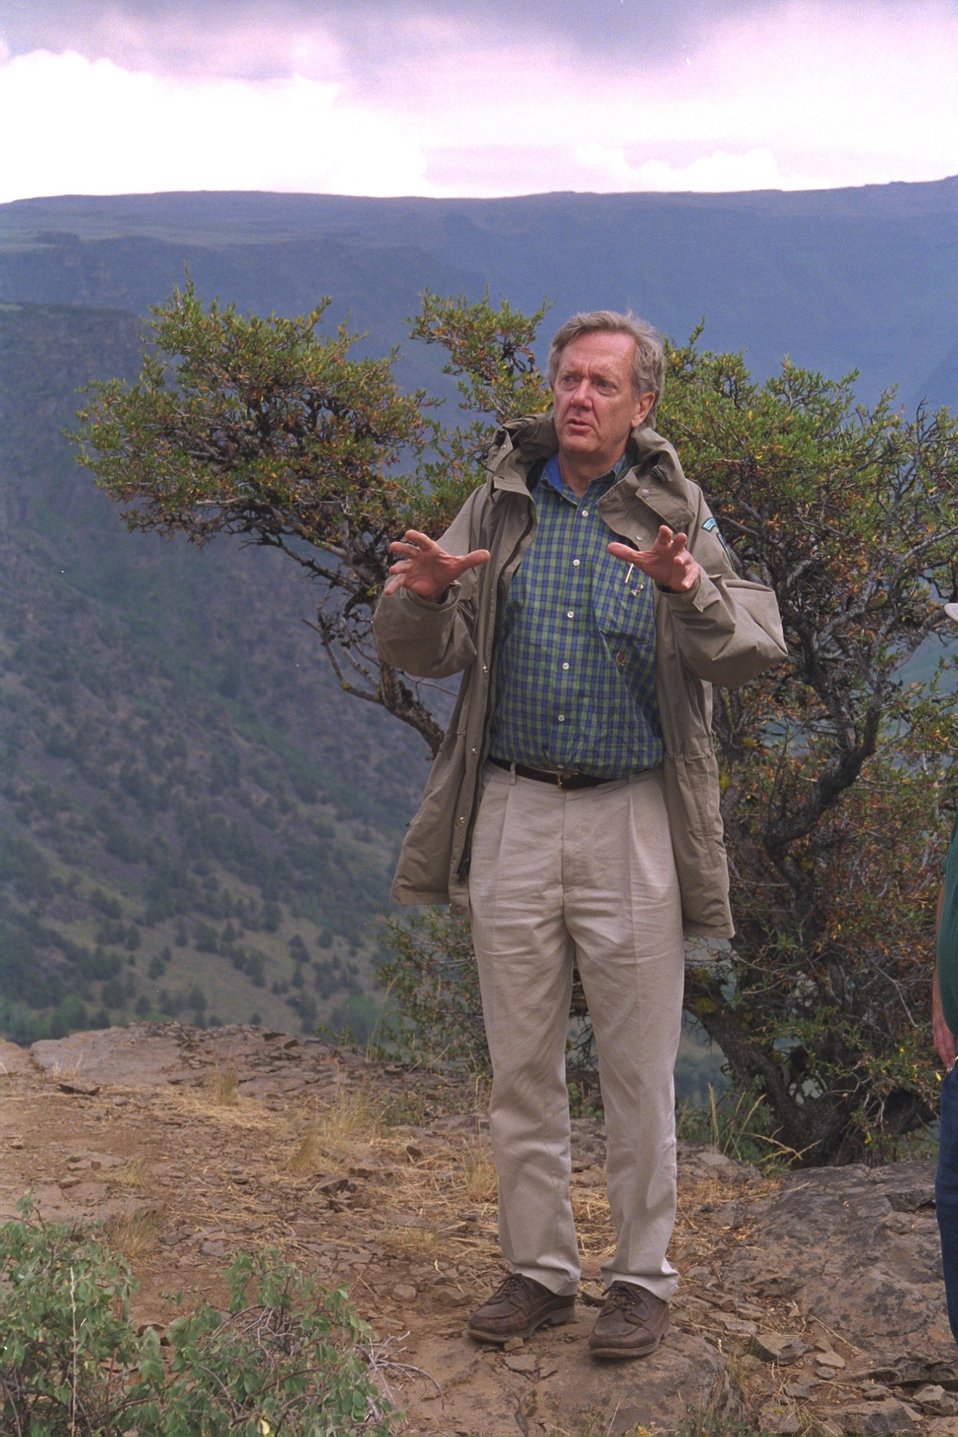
Secretary of the Interior, Bruce Babbitt, at Big Indian Gorge on Steens Mountain.